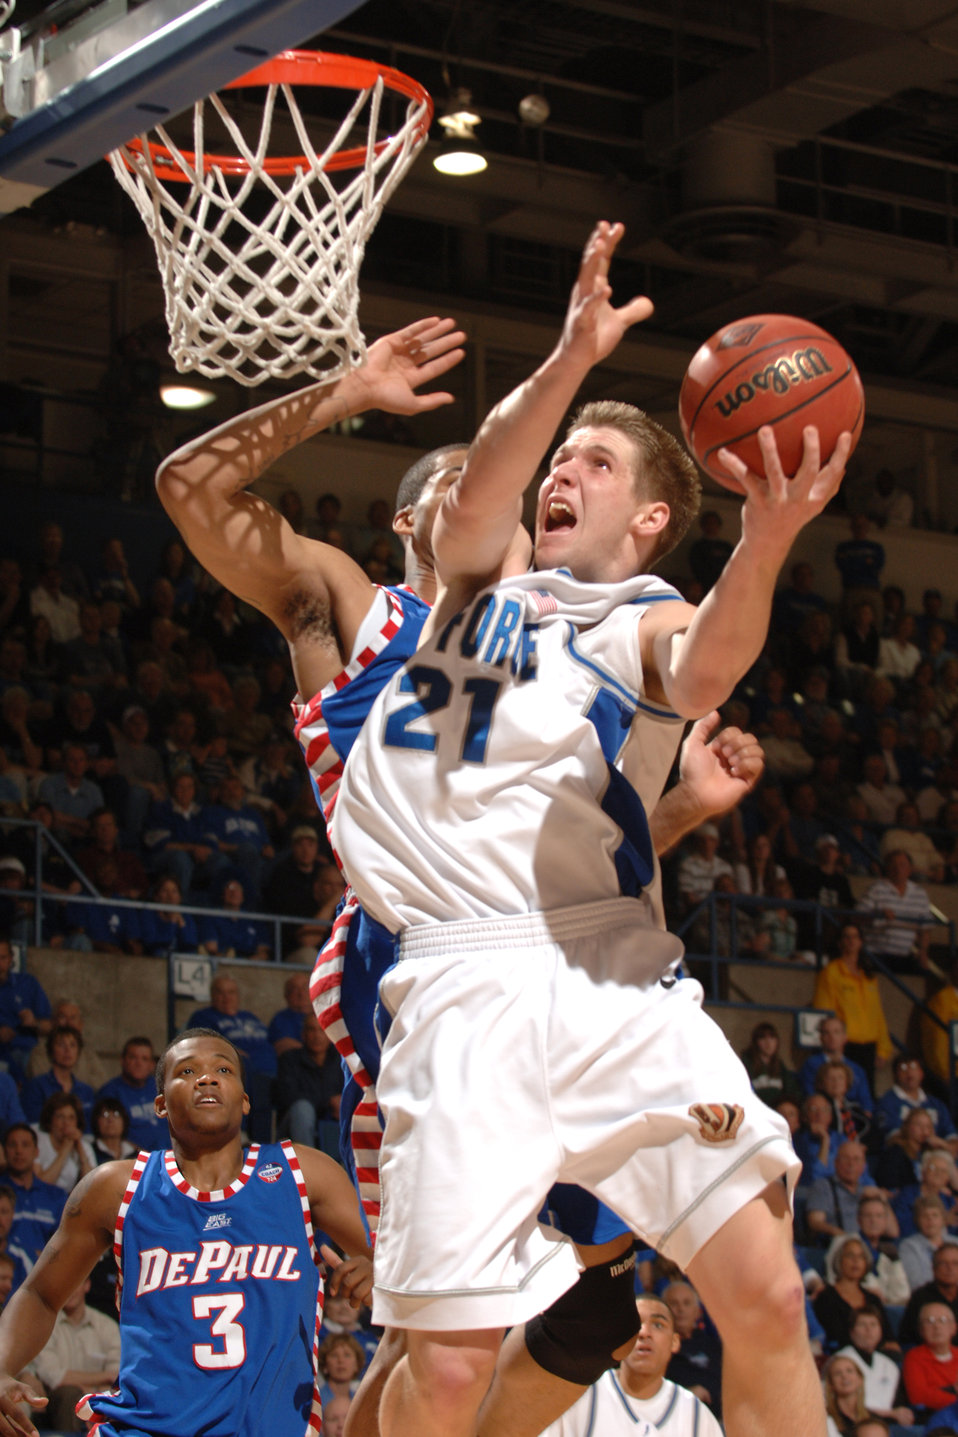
Falcons reach NIT final four in NYC

Falcon forward Jacob Burtschi drives against DePaul March 21 at Clune Arena. Burtschi's bucket with 7.7 seconds left gave Air Force a 52-51 win and a berth in the NIT semifinals in New York's Madison Square Garden March 27 against Clemson.